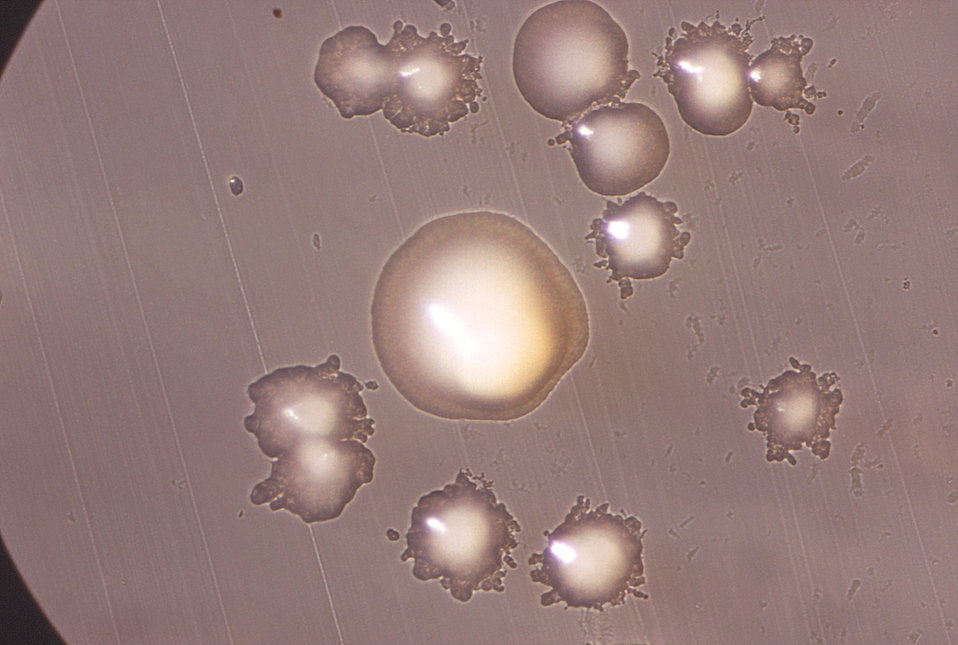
Magnified 12.5X, this image depicts the morphologic characteristics displayed by a number of mature Gram-positive, Actinomyces naeslundi bacterial colonies, of the 'rough' strain, W-1096, which were cultivated on an unknown culture medium.